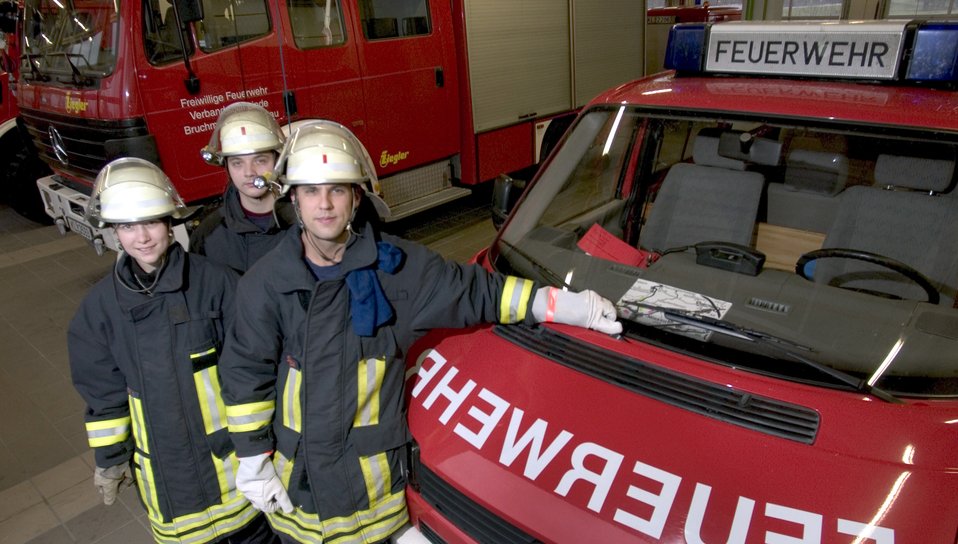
American 'feuerfighter'

BRUCHMUHLBACH-MIESAU, Germany – Tech. Sgt. Mark Smurda (right) spends his off-duty time with local German firefighters Tina Heintz (left) and her brother, Ingo, at the volunteer fire department here. Sergeant Smurda is a firefighter assigned to the 86th Civil Engineer Squadron at Ramstein Air Base. He said volunteering allows him to test his Air Force skills and learn new approaches to firefighting.